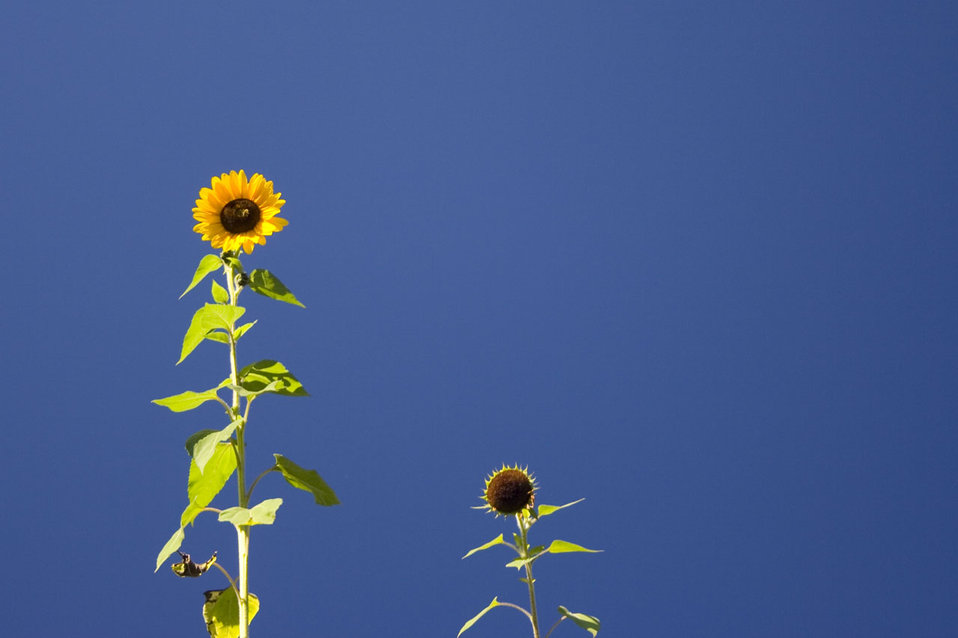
Sunflowers

Two sunflowers against the blue sky.